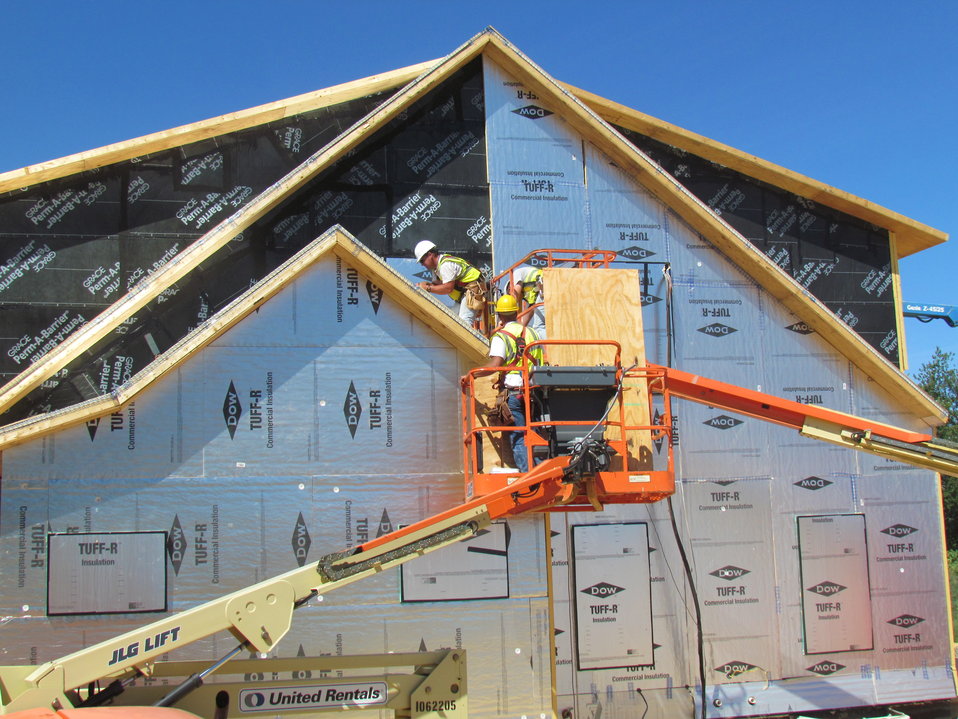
Net-Zero Energy Residential Test Facility - Photo showing workman installing plywood sheathing on roof of facility over layers of foil-faced foam.